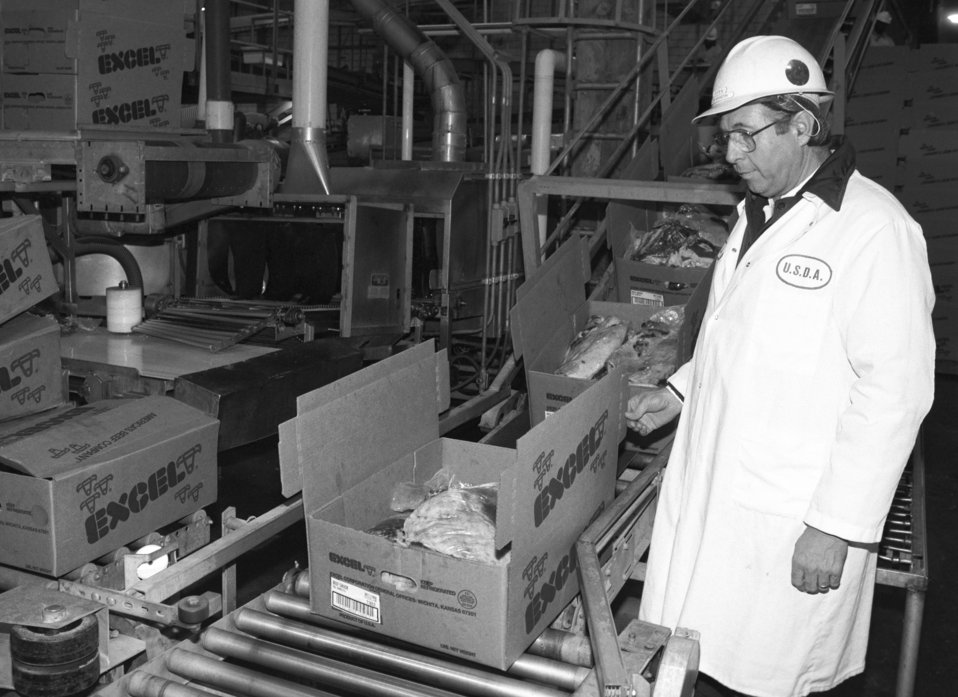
U.S. Department of Agriculture (USDA) Food Safety Inspection Service (FSIS) inspectors inspect beef using a Streamline Inspection System (SIS) at a processing plant in Plainview, TX on January 22, 1991.